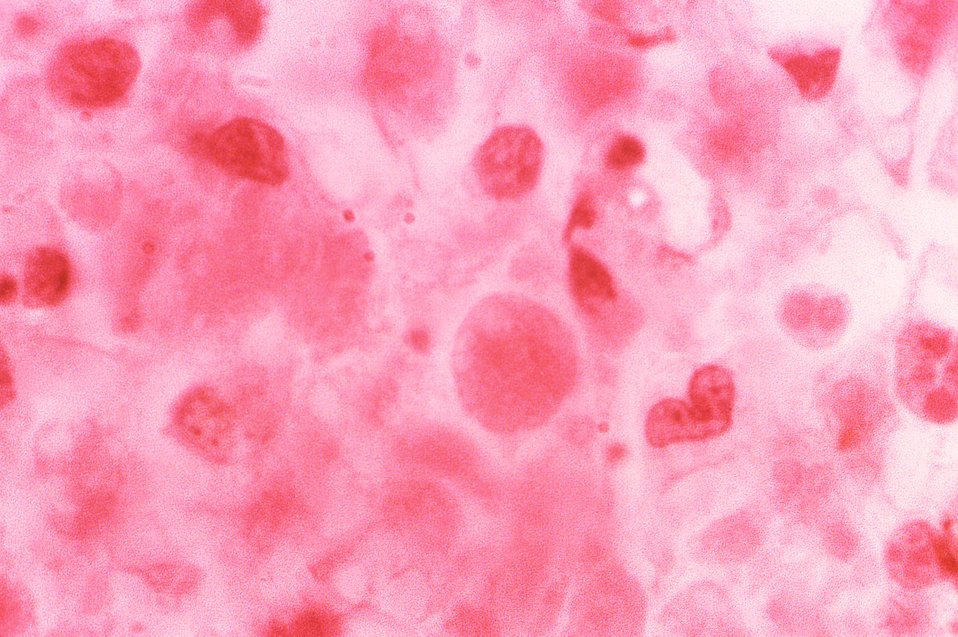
Under a moderately-high magnification of 250X, this hematoxylin-eosin-stained (H&E) photomicrograph depicts the cytoarchitectural changes found in a liver tissue specimen extracted from a deceased yellow fever patient. Of importance, is the presence of 'Councilman bodies with vacuoles resulting from fatty degeneration. See PHIL 2176, and 8239, depicting TEMs of the yellow fever virus.